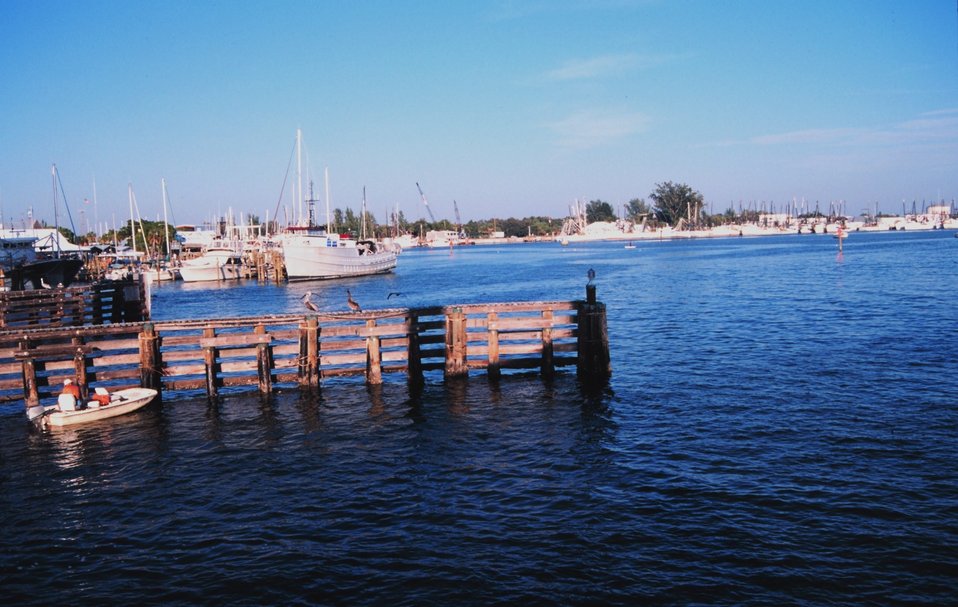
Shrimp boats docked along the Caloosahatchee River